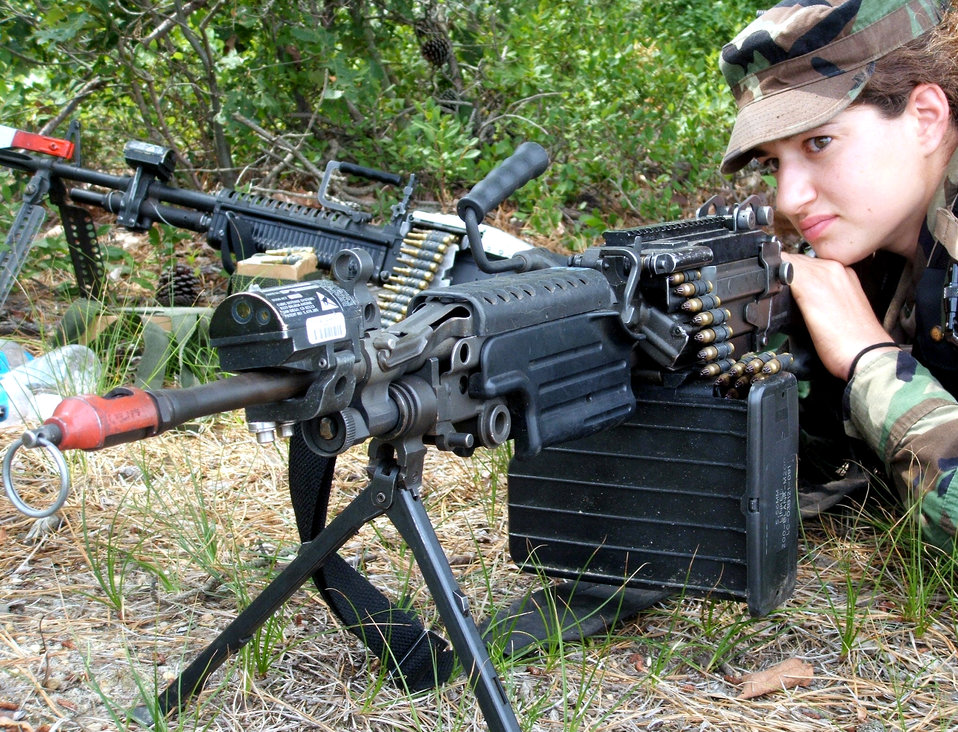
Eagle Flag

Airman 1st Class Renee Verdecchio watches over a perimeter area during operations for exercise Eagle Flag 06-3 at Naval Air Engineering Station Lakehurst, N.J., on Saturday, July 15. The exercise is the only flag-level exercise that tests Airmen from multiple Air Force specialties on their expeditionary combat support skills. The exercise is coordinated by the Air Mobility Warfare Center's 421st Combat Training Squadron. Airman Verdecchio is assigned to the 305th Security Forces Squadron at McGuire Air Force Base, N.J.